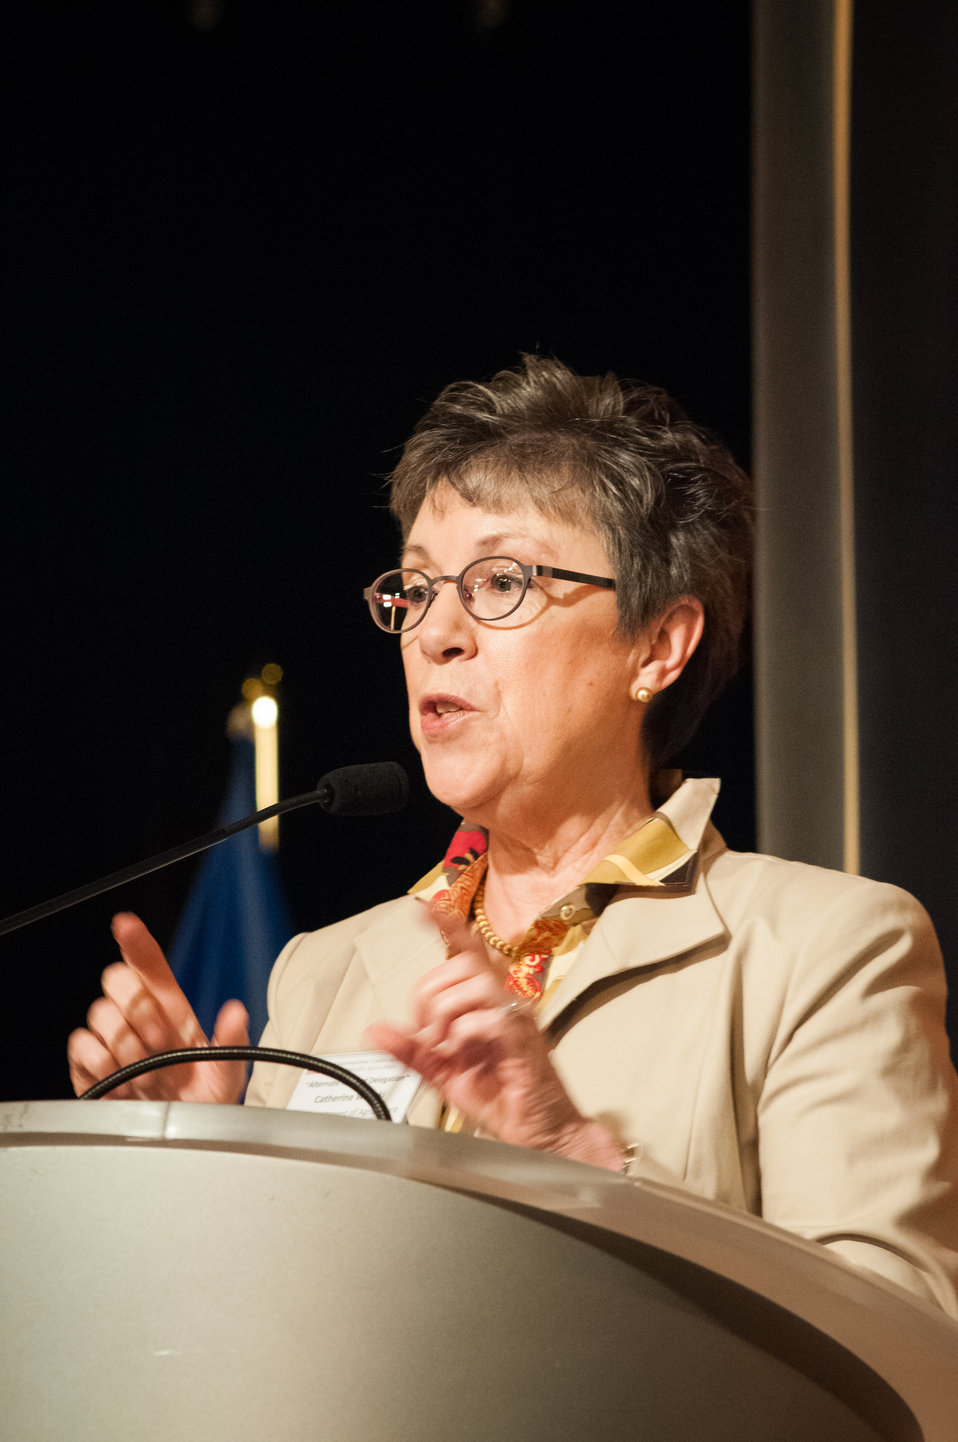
Agriculture Under Secretary Research, Education and Economics (REE) Host and Mistress of Ceremonies Dr. Catherine Woteki introduces the speakers on the second day of the two day G-8 International Conference on Open Data for Agriculture in Washington, D.C. on Tuesday, Apr. 30, 2013. The conference launched a new 'virtual community' of Food, Agriculture, and Rural data on Data.gov-the U.S. Government's data sharing website-to catalogue America's publicly available agricultural data and increase the ability of the public to find, download, and use datasets that are generated and held by the Federal Government. The data community features a collection of more than 300 newly cataloged datasets, databases, and raw data sources related to food, agriculture, and rural issues from agencies across the U.S. Government. In addition to the data catalog, the virtual community shares a number of applications, maps and tools designed to help farmers, scientists and policymakers improve global food security and nutrition.